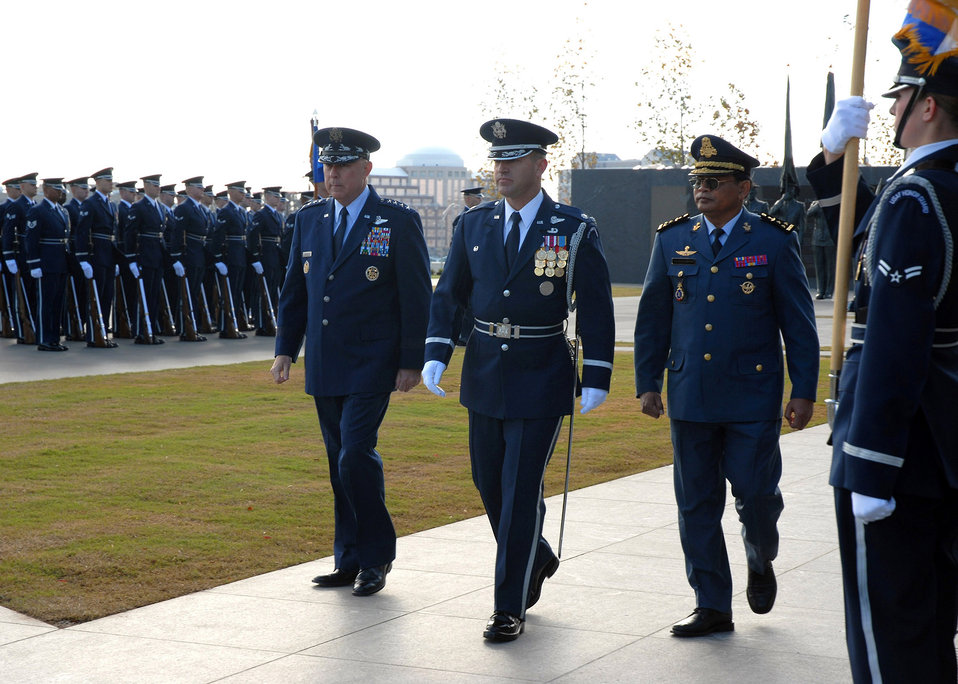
Paying Respect

Chief of Staff of the Air Force Gen. T. Michael Moseley and Lt. Gen. Soeung Samnang, Cambodian Royal Air Force commander, are escorted by Lt. Col. Gaylord Thomas, Air Force Honor Guard commander, to inspect the troops during a foreign dignitary arrival and wreath laying ceremony Tuesday, Oct. 24, 2006, at the Air Force Memorial.